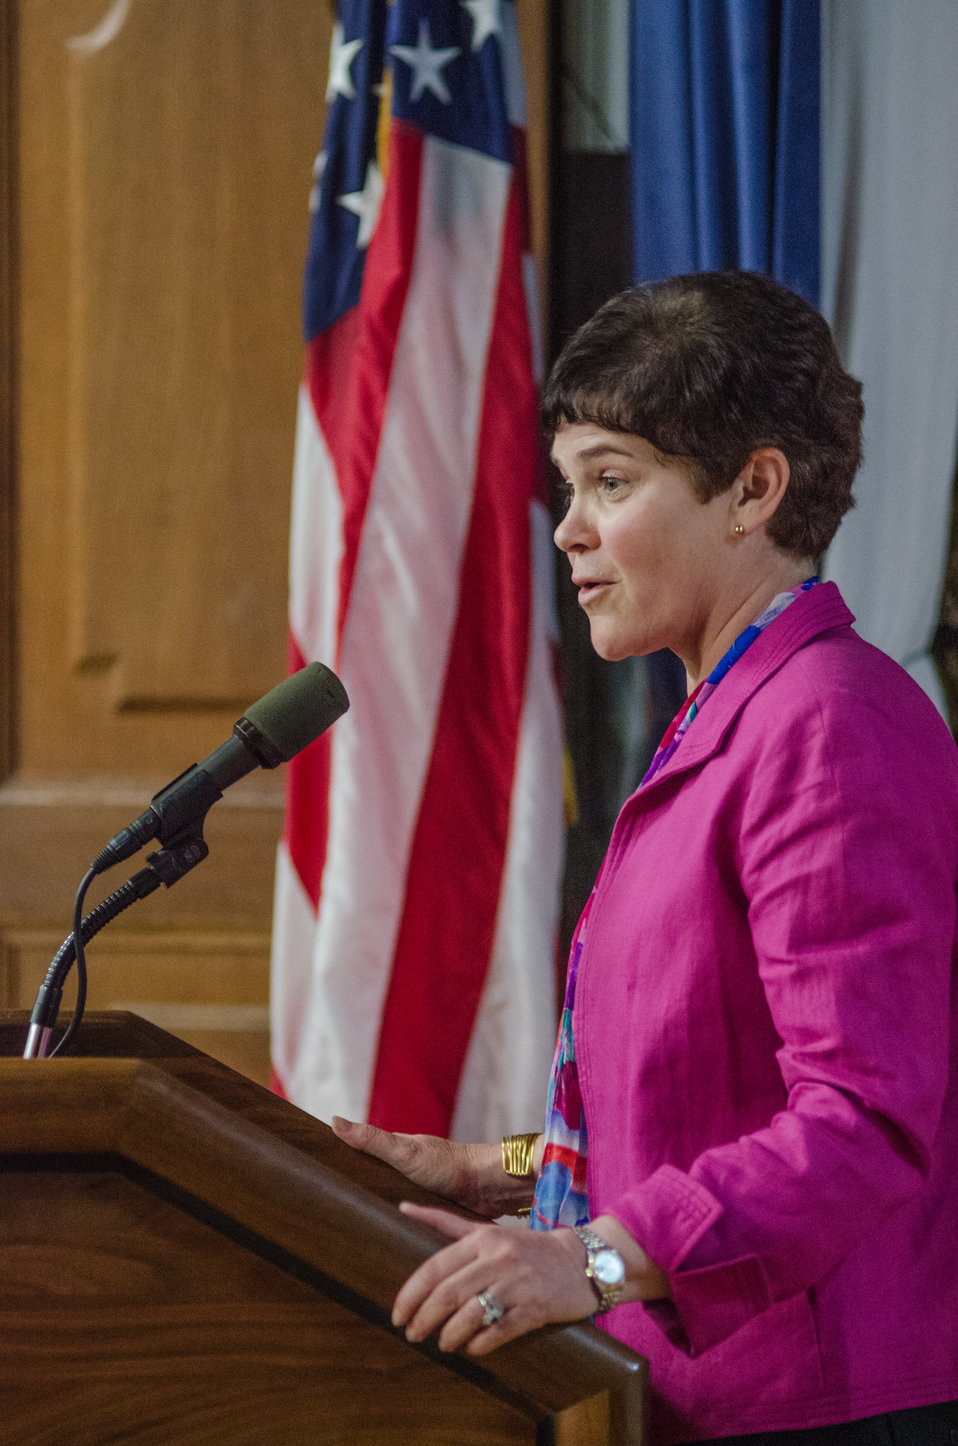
Agriculture Deputy Secretary Krysta Harden speaks at the U.S. Department of Agriculture’s (USDA) Rural Development’s (RD) 2nd Annual Cultural Transformation kickoff opening ceremony and forums, themed “Employees Influencing Change,” on Tuesday, Aug. 13, 2013 at USDA in Washington, D.C.